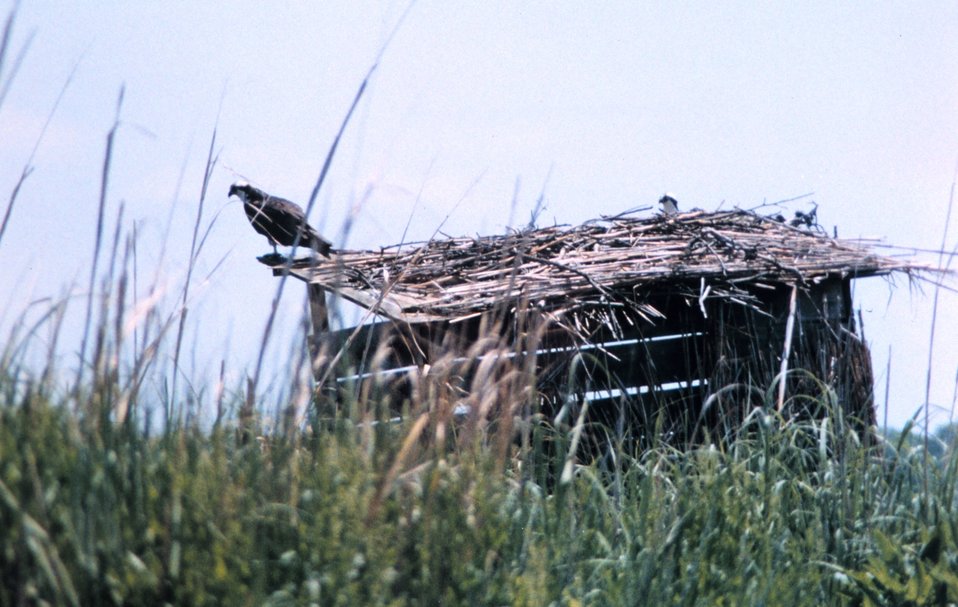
Ospreys nesting along a Patuxent River duck blind.